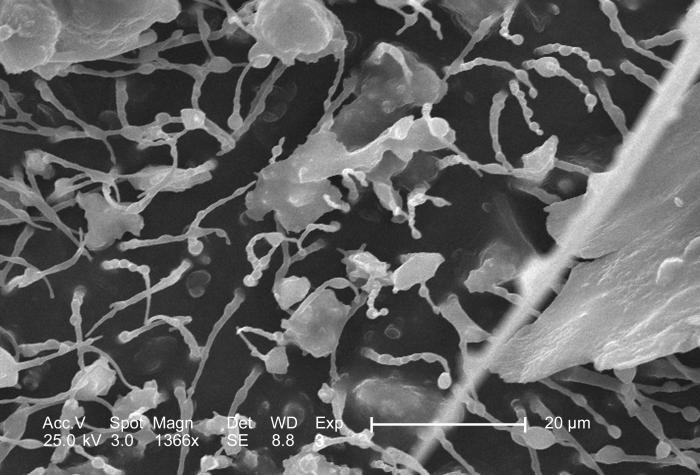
By magnifying a dragonfly's exterior 1366x, this 2005 scanning electron micrograph (SEM) depicted the forest of sensorial hairs, or 'setae', covering the surface of its chitinous exoskeleton. Amongst the setae were unidentified particulates that had been picked up from the insect's habitat. These hairs are sensitive to changes in the organism's environment including changes in temperature, wind speed and direction, and act as mechanoreceptors, picking up on changes to the physical make-up of its surroundings, i.e., tactile interaction. These setae, along with the insect's antennae, eyes, and wings offer the organism a detailed comprehensive depiction of its immediate environment by providing the insect with measurable changes in temperature, chemistry, and touch.